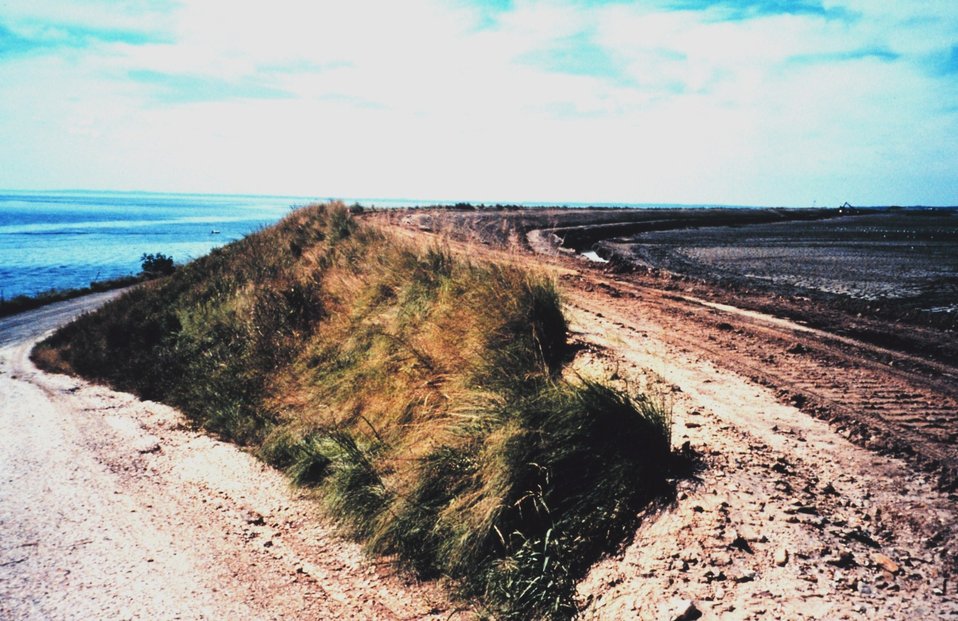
Hart-Miller Island, once two islands that nearly eroded into extinction, are now one. They are being regenerated and enlarged with dredge spoils from Baltimore Harbor.